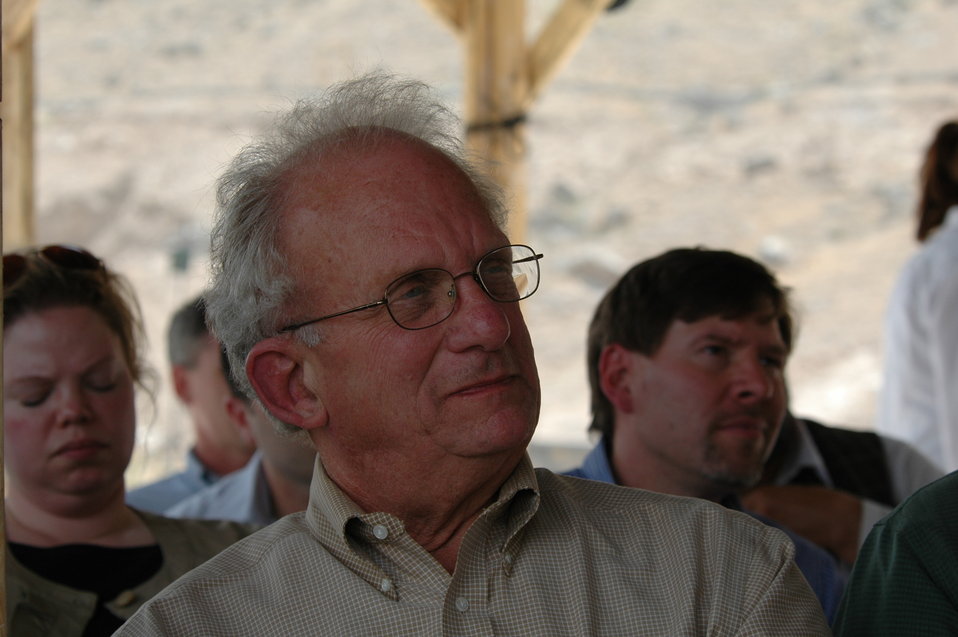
CODEL Berman